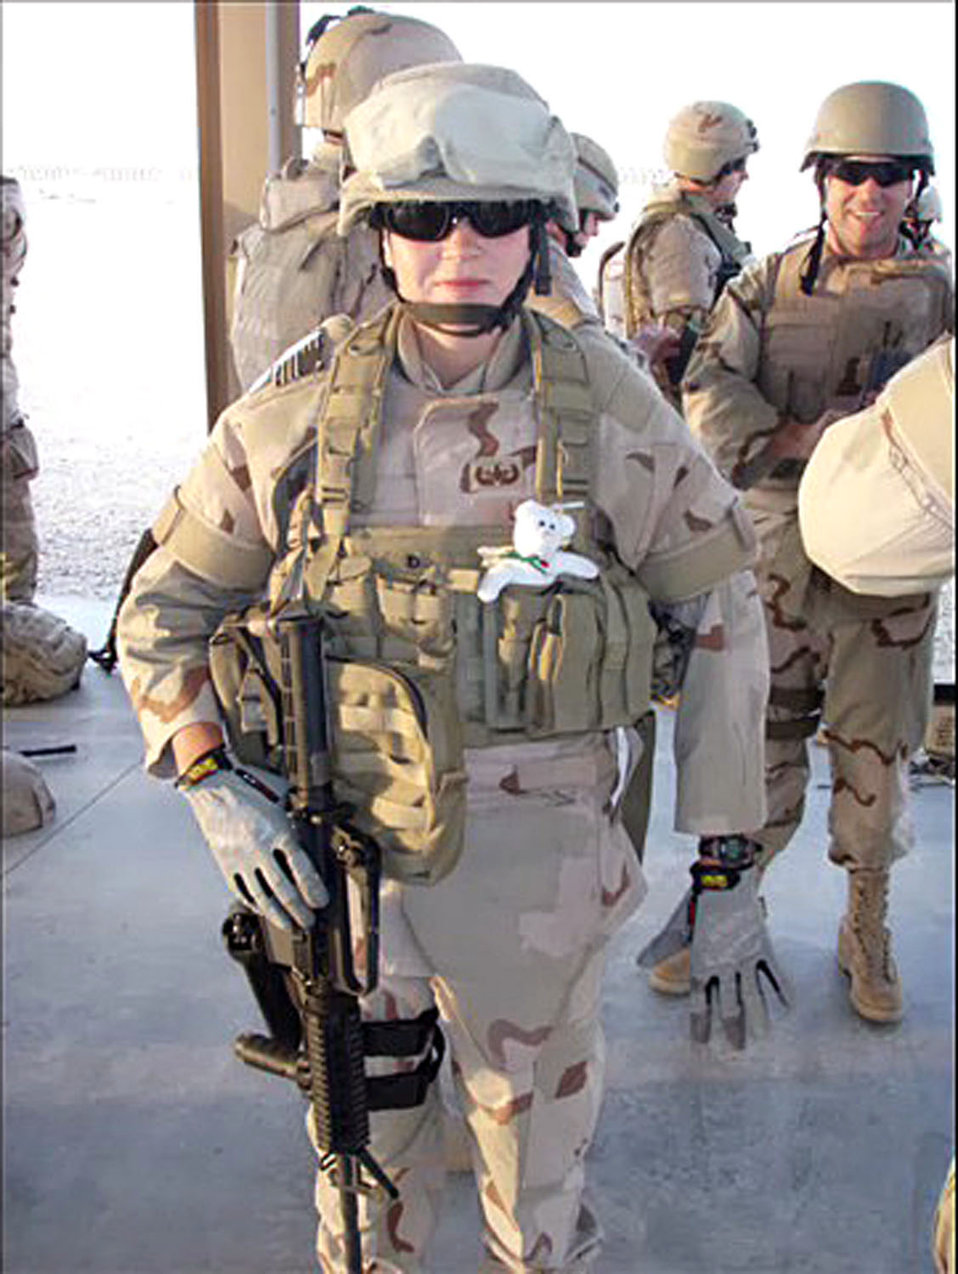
The women of explosive ordnance disposal

Senior Airmen Elizabeth Loncki in Iraq. She was killed Jan. 7, 2007, as her explosive ordnance disposal team tried to dismantle a car bomb planted near Baghdad, Iraq.